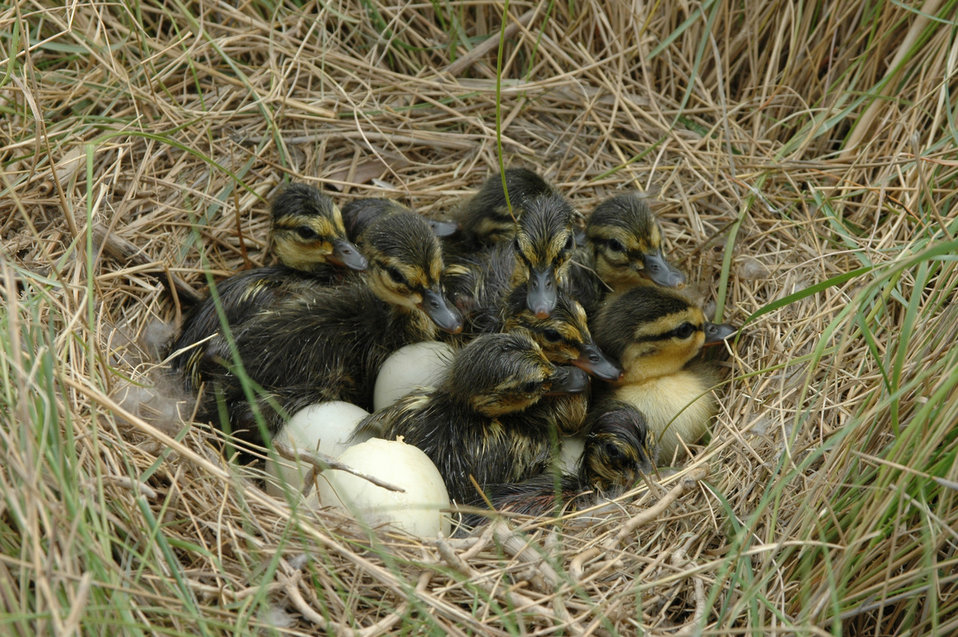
American Black Duck

Ducklings in nest at Chesapeake Bay, MD.